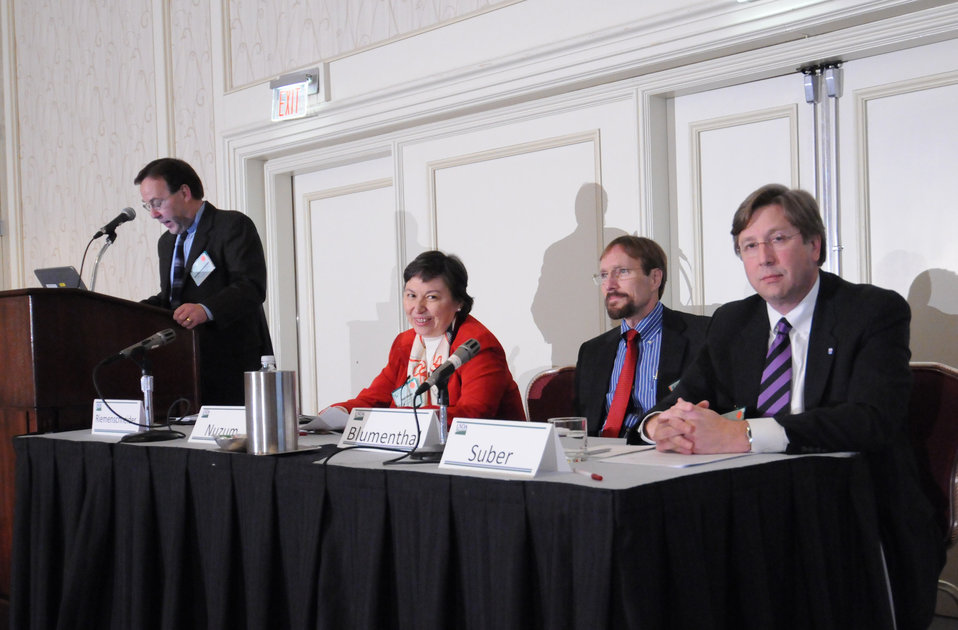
Moderator Robert Riemenschneider, Deputy Administrator, Office of Global Analysis, Foreign Agriculture Service, U.S. Department of Agriculture makes remarks during the breakout session on Foreign Trade and the National Export Initiatives at the World Agricultural Outlook Board Forum, held in Arlington, VA, on Thursday, February 24, 2011. Also, on the panel were (left to right) Janet Nuzum, General Sales Manager, Associate Administrator, Foreign Agriculture Service, USDA, Gary Blumenthal, President and CEO, World Perspectives, Inc., and Tom Suber, President, U.S. Dairy Export Council.